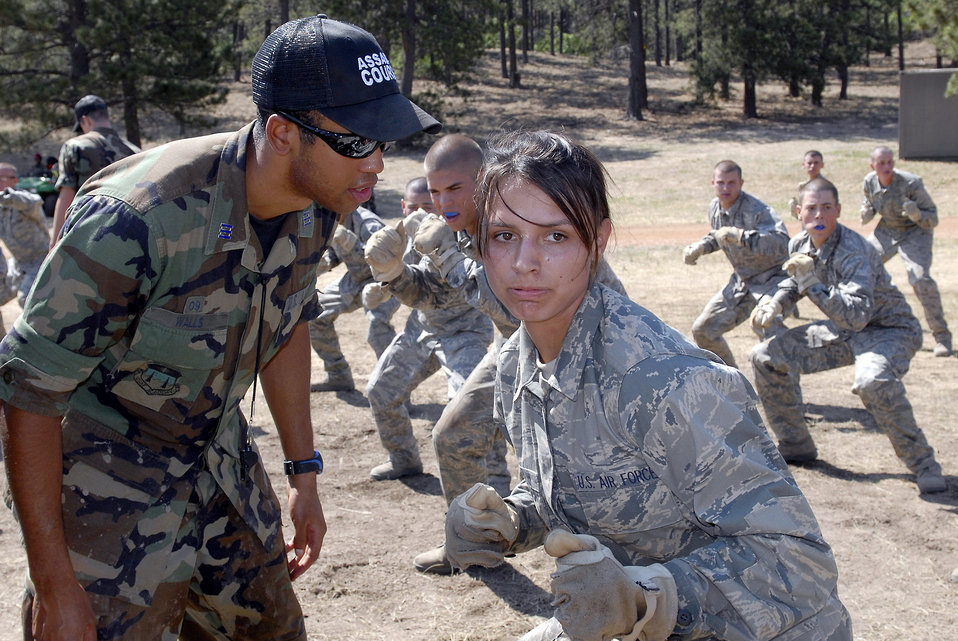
You can do this...

U.S. Air Force Academy Cadet 1st Class Clinton Walls directs Basic Cadet Fanita Schmidt in hand combat skills during the field training portion of basic training July 16 at the U.S. Air Force Academy in Colorado.